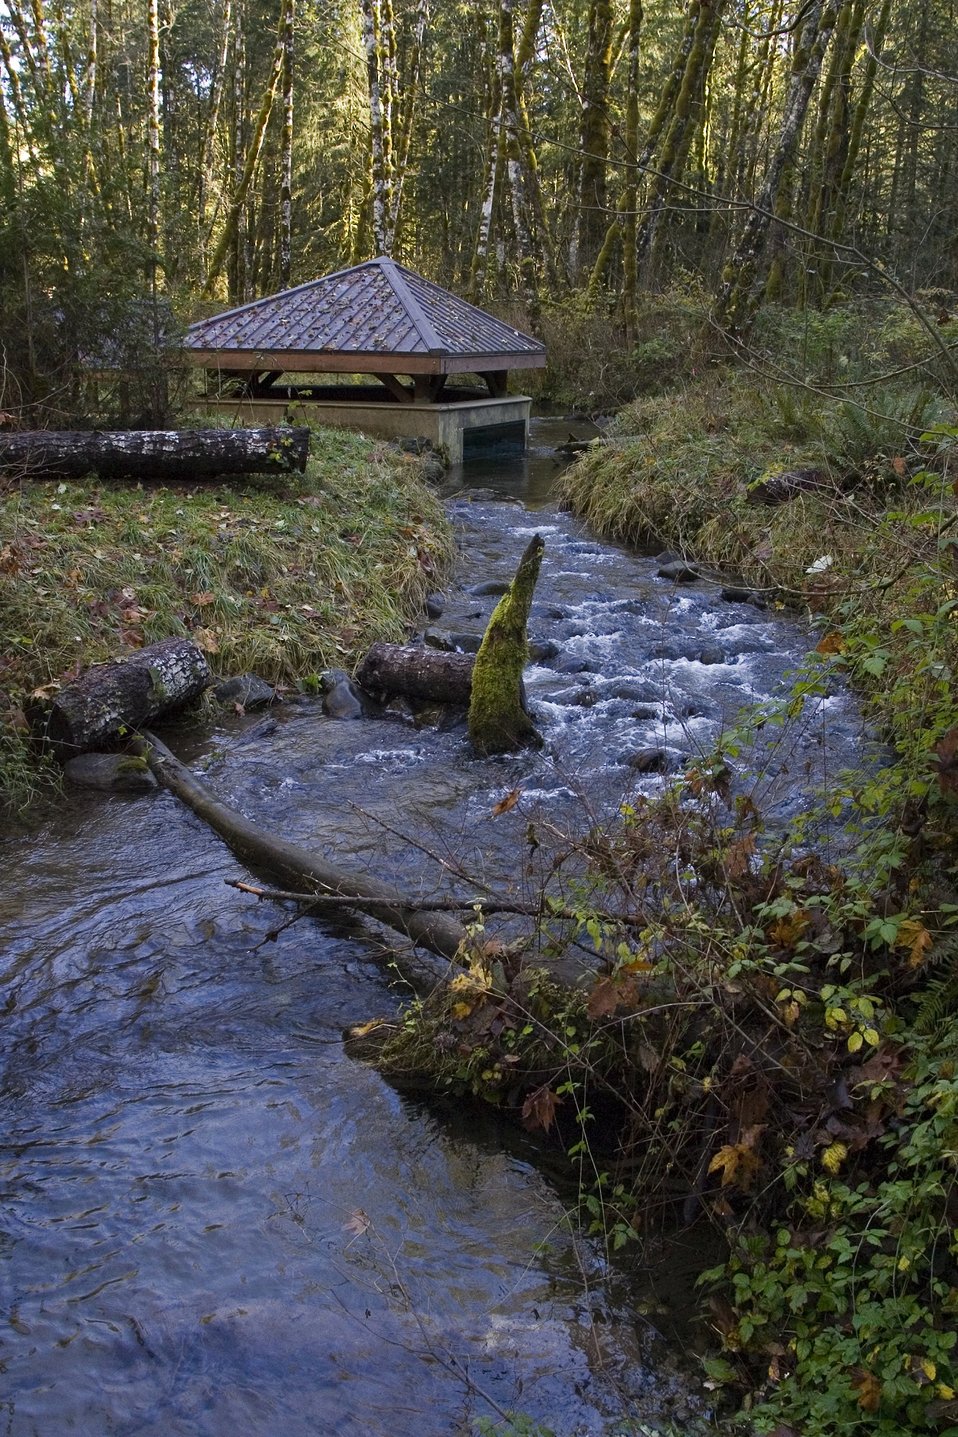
This structure at Wildwood Rrecreation Area near Mt. Hood lets visitors look below the surface of the creek water to observe fish and other aquatic life